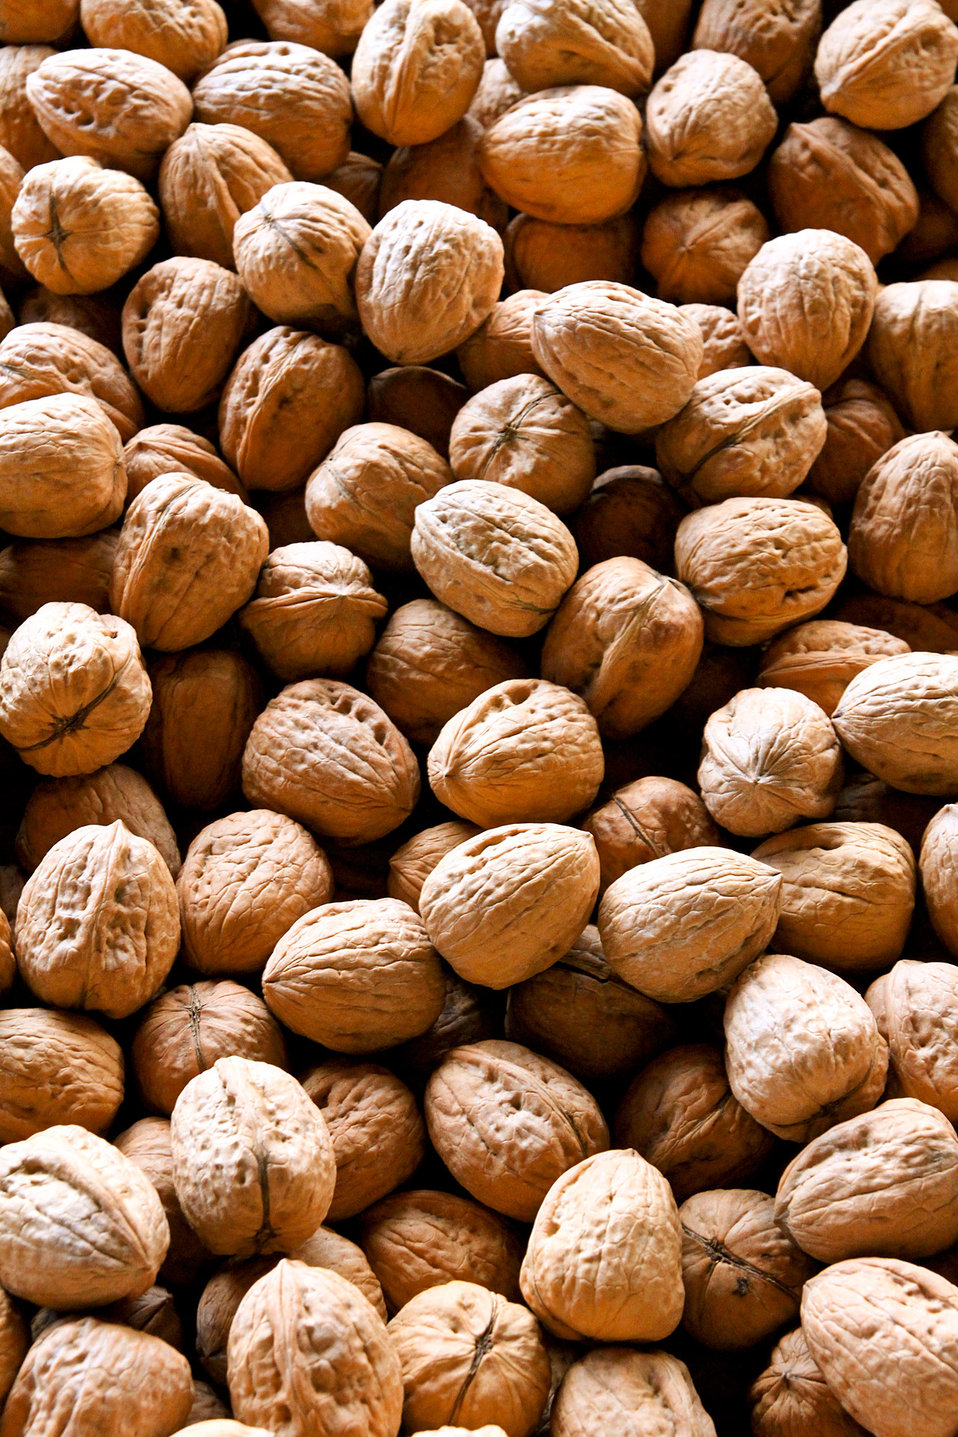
Walnuts at a farmers market.